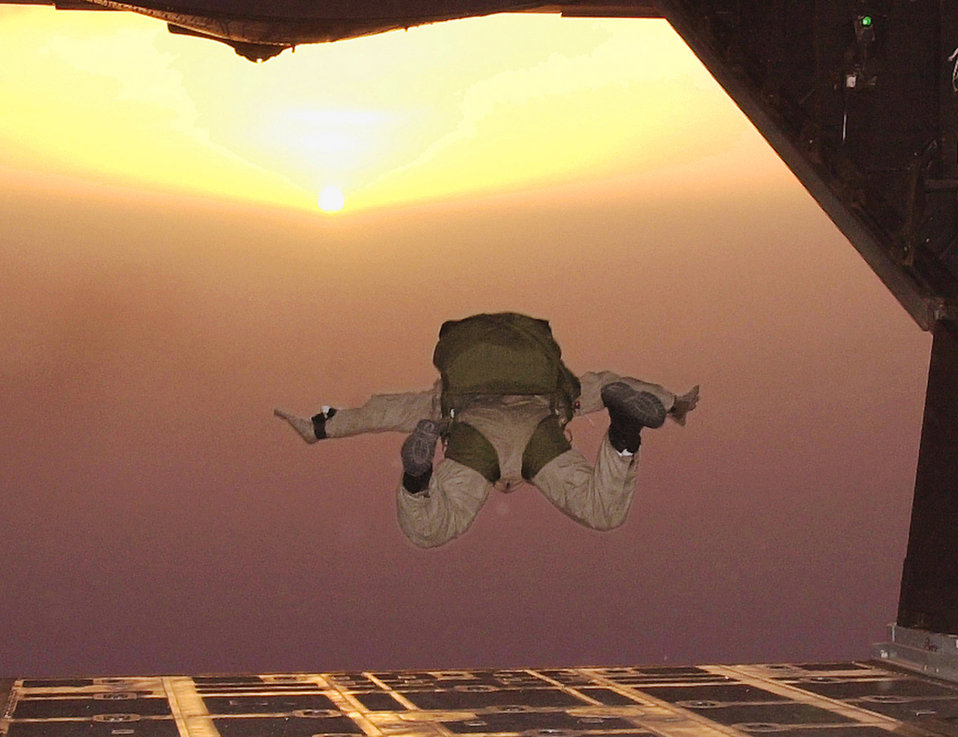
Zero G

AHMED AL JABER AIR BASE, Southwest Asia -- Staff Sgt. David Risnear, a combat controller and jumpmaster with the Air Force Special Operations Detachment here, catches some air after jumping from the back of an MC-130E Combat Talon II. The HALO (High Altitude, Low Open) jump included members of the 332d Expeditionary Security Forces Squadron, AFSOD and others from Camp Doha.